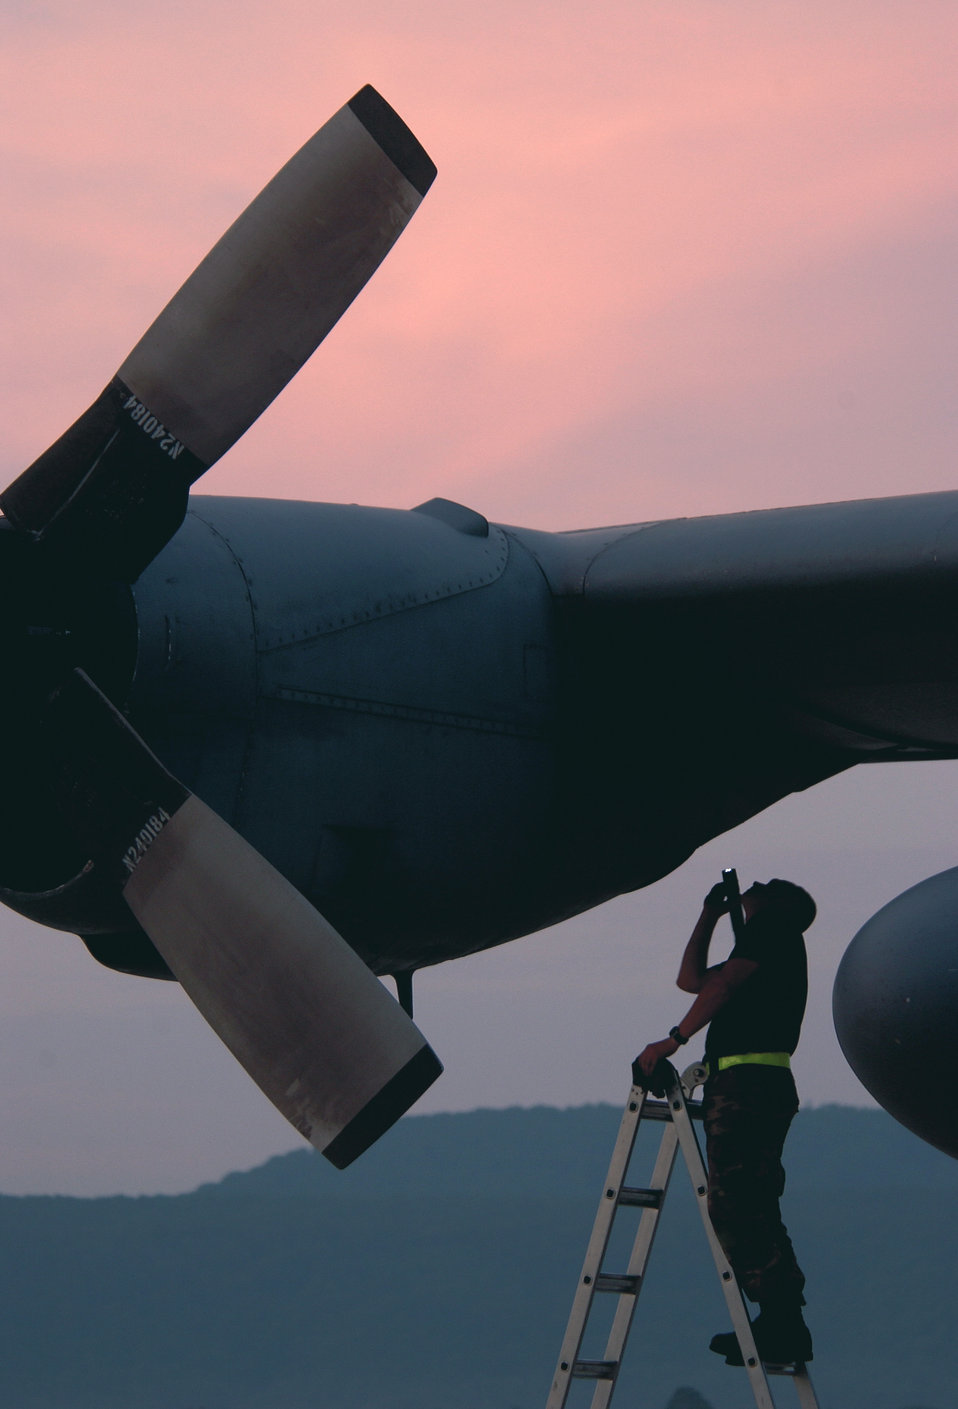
One last check

RAMSTEIN AIR BASE, Germany -- Staff Sgt. Raymond Baker performs an intake and exhaust inspection on a C-130 Hercules before take off here 5 August. Sergeant Baler is assigned to the 86th Aircraft Maintenance Squadron.